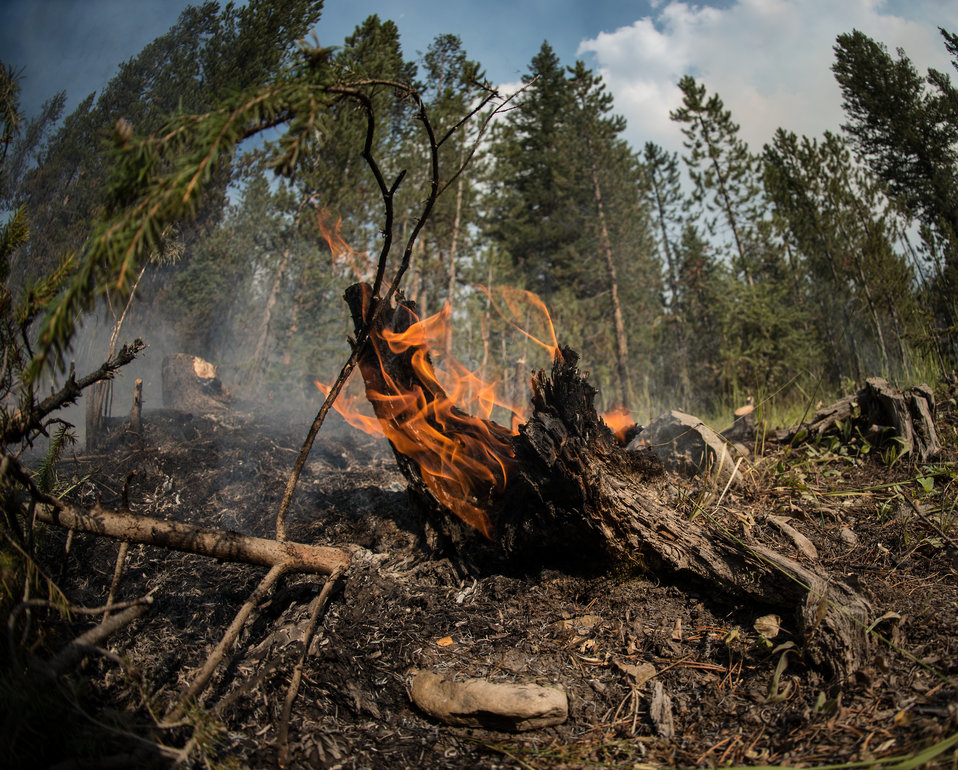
Structure protection, burnout of roads and natural barriers will help slow the progression of the main fire in the East Fork of Baker Creek, in the Sawtooth National Forest, during the Beaver Creek Fire, northwest of Hailey, ID, on Tuesday, Aug 20, 2013. Many homes are nestled in thick groves of trees. Feller and skidders are used to thin the density of trees close to homes.